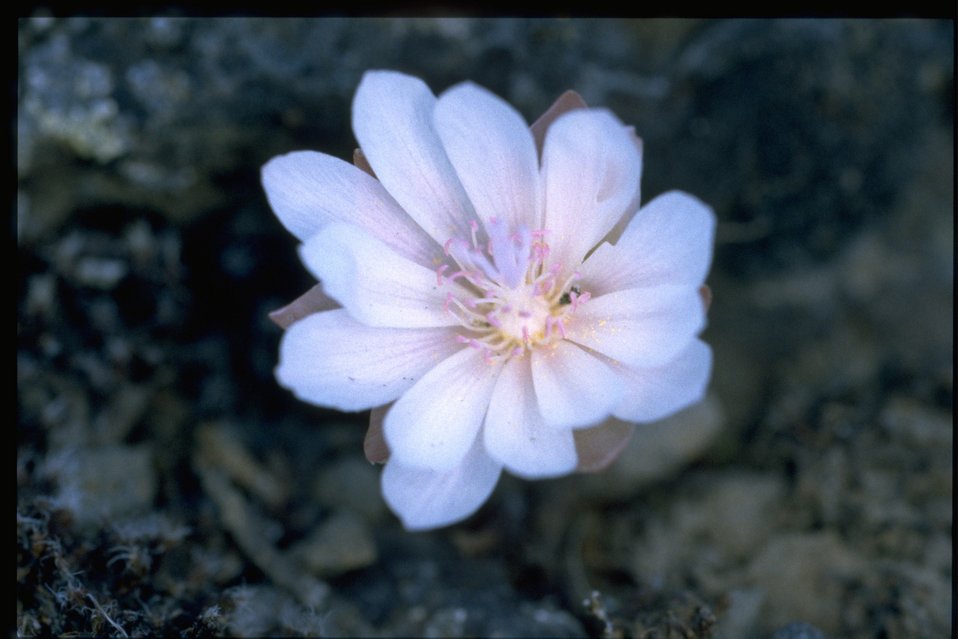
Closeup shot of bitter root (Lewisia rediviva).